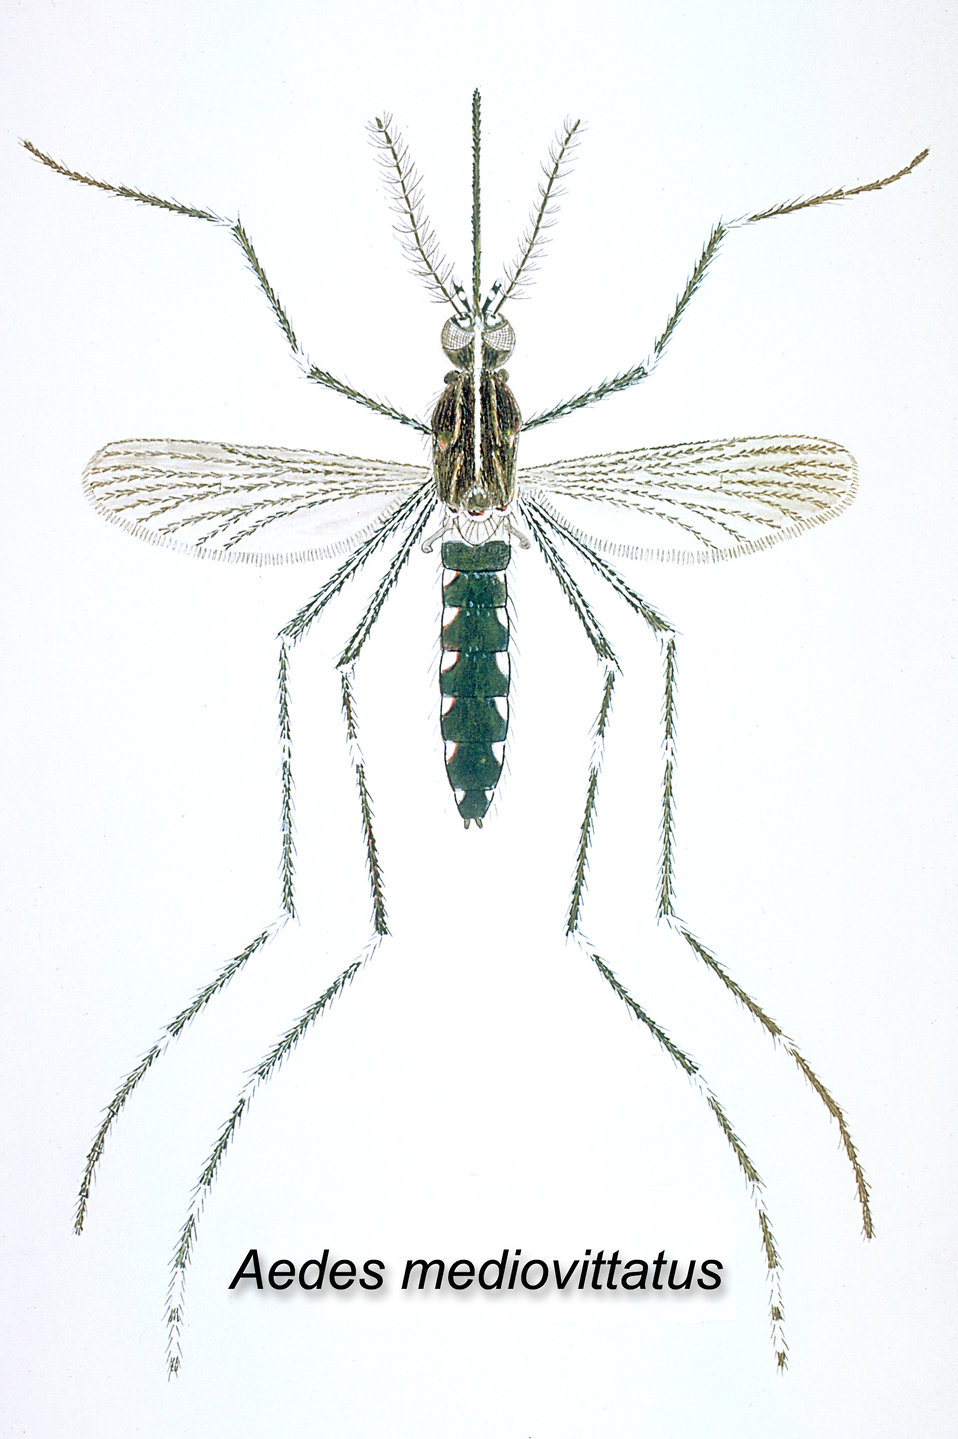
The Aedes mediovittatus mosquito has been shown to be a vector in the transmission of Dengue Fever. (Illustration)